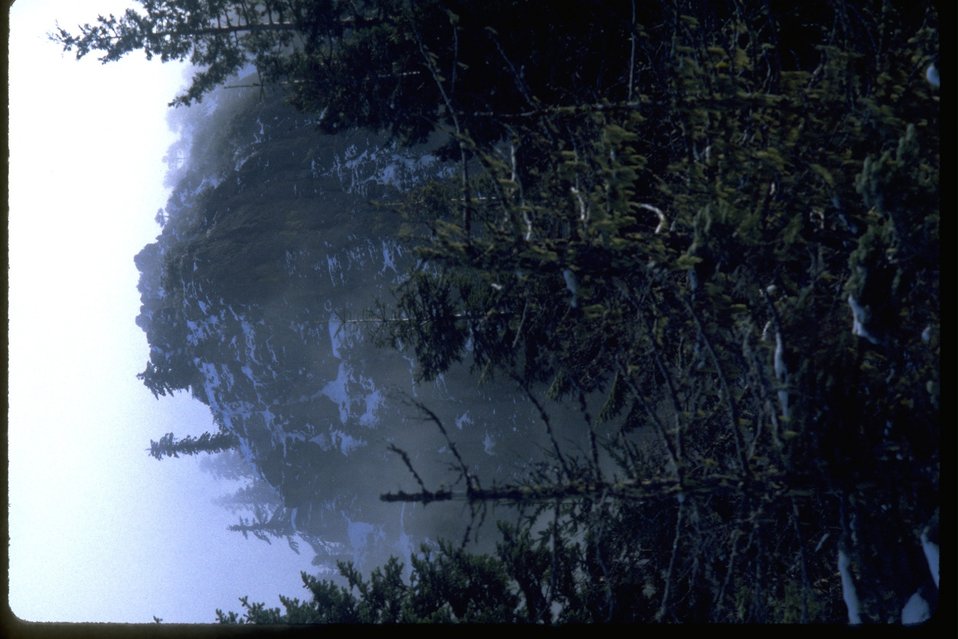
Hobart Bluff with snow.